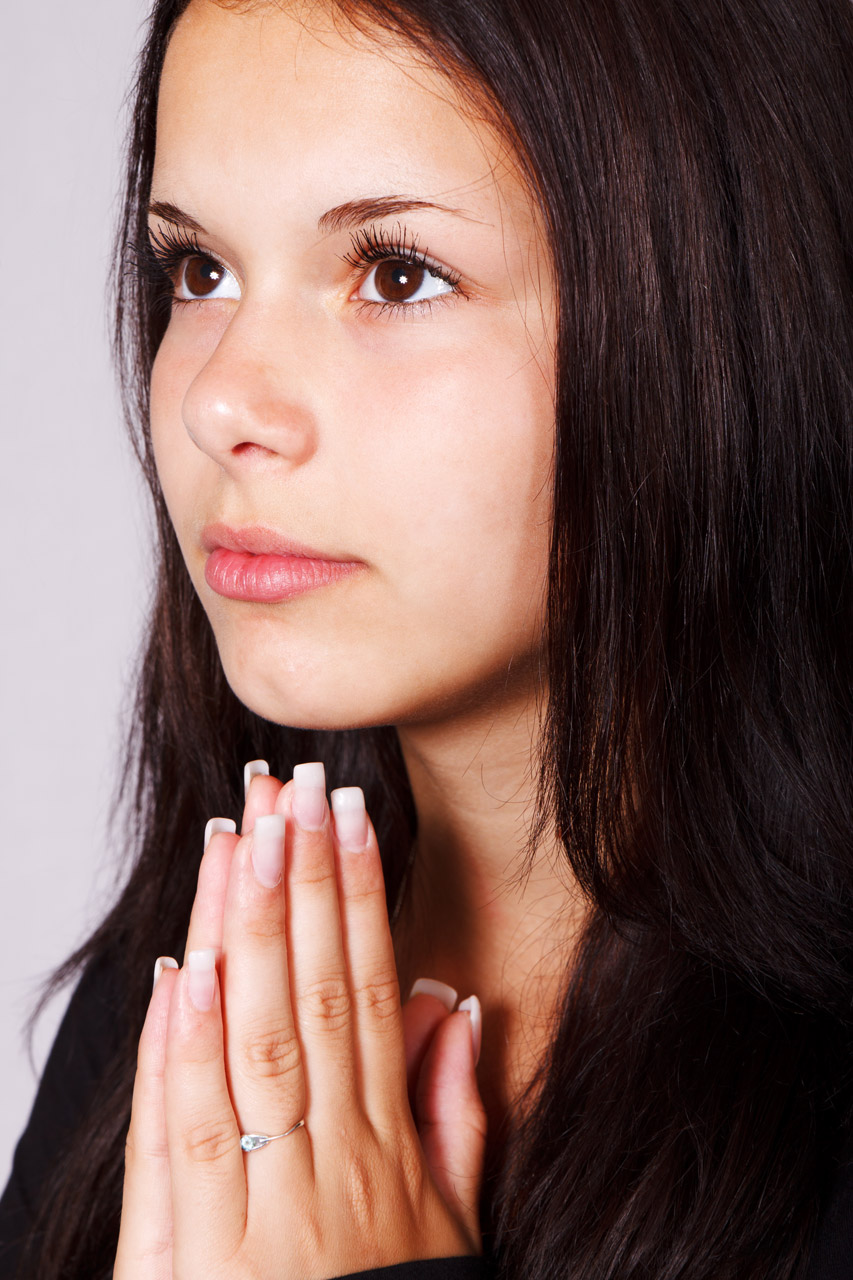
Woman praying

Young woman is praying to god.